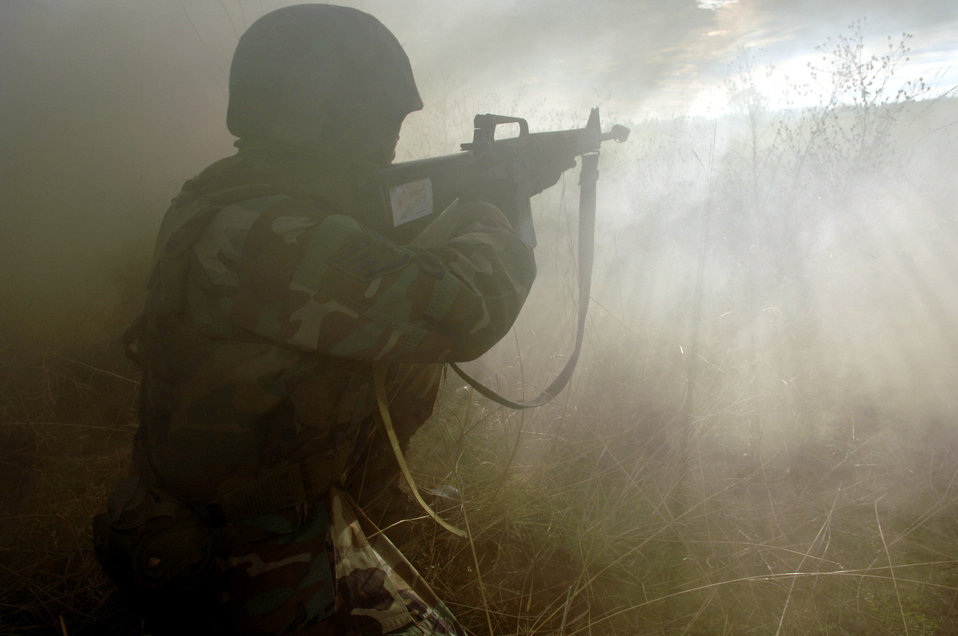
SF combat training

FAIRCHILD AIR FORCE BASE, Wash. (AFPN) -- An Airman takes aim into the fog during a combat skills training course. Fairchild is among the Air Mobility Command bases that have started conducting combat skills training.